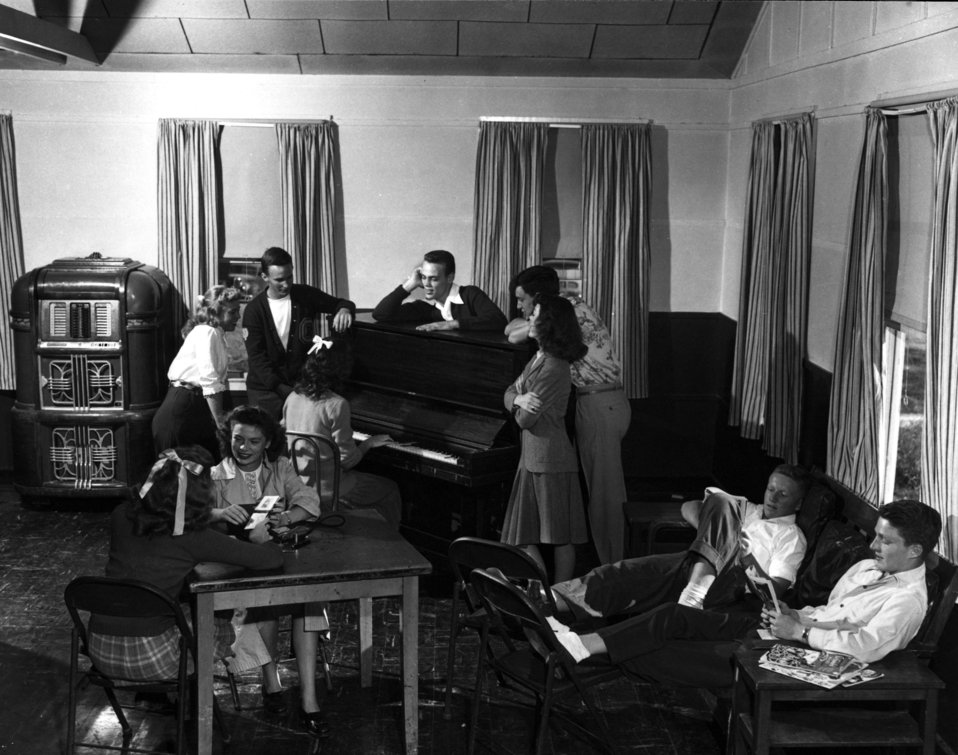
Teen Center Oak Ridge

med45 DOE photo by Ed Westcott Oak Ridge Tennessee 1940s